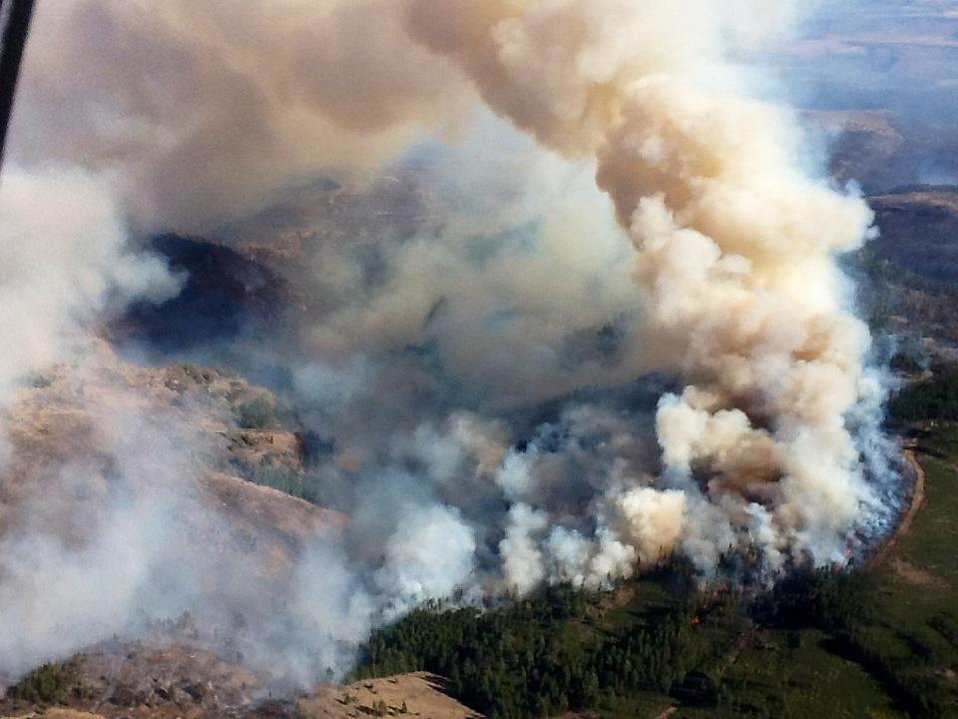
The Sunnyside Turnoff Fire near Warm Springs, OR began on Jul. 20, 2013 is under investigation and has consumed approximately 51,340 acres. The fire is approximately 95% contained.